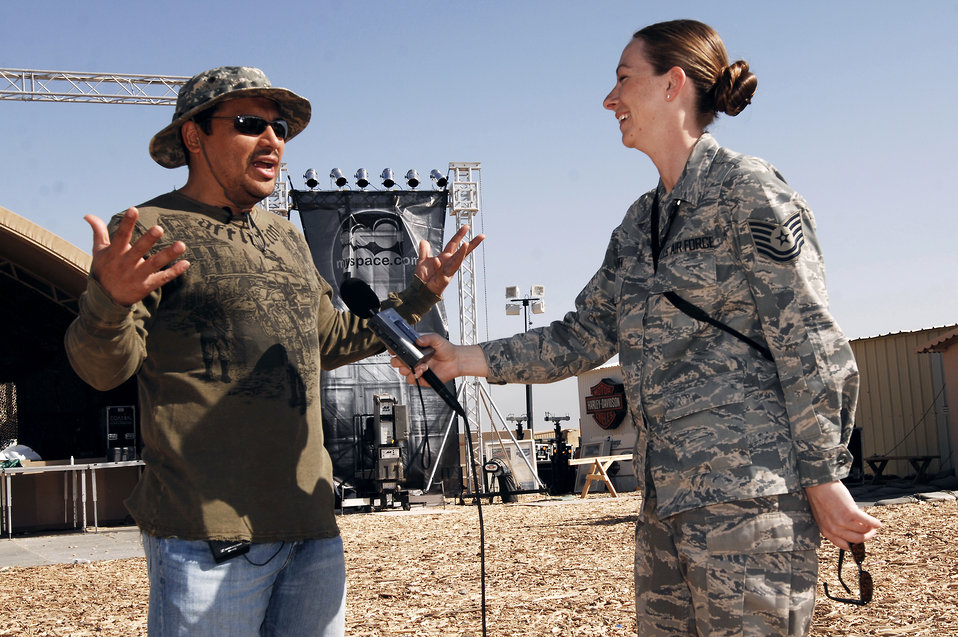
Operation MySpace

Tech. Sgt. Tara O'Brien interviews world renowned comedian Carlos Mencia prior to a live concert March 9 at a U.S. Army camp in the Persian Gulf Region. MySpace, in cooperation with Department of Defense's Armed Forces Entertainment and America Supports You program, brought Operation MySpace to servicemembers headed into and out of Afghanistan and Iraq. This landmark concert, with entertainment acts from Disturbed, Filter, Pussycat Dolls, disc jockey Z-Trip, and host Carlos Mencia, provided a taste of home via the wonder of live music to troops supporting operations Enduring Freedom and Iraqi Freedom. Sergeant O'Brien is a Broadcast Journalist for the Combined Air Operations Center and is deployed from Aviano Air Base, Italy.